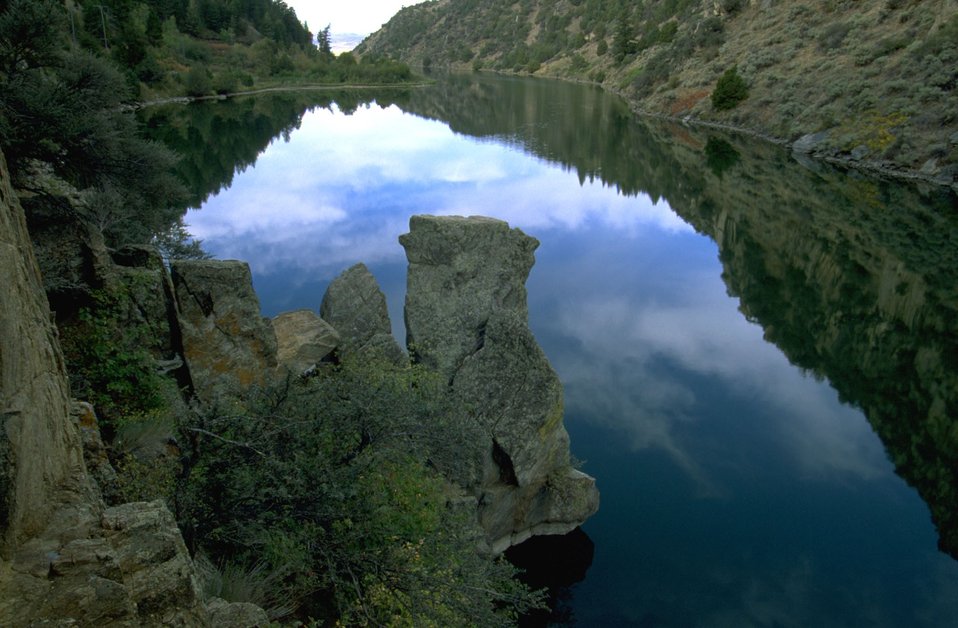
Reflection of rock pillar, hillside and clouds on water